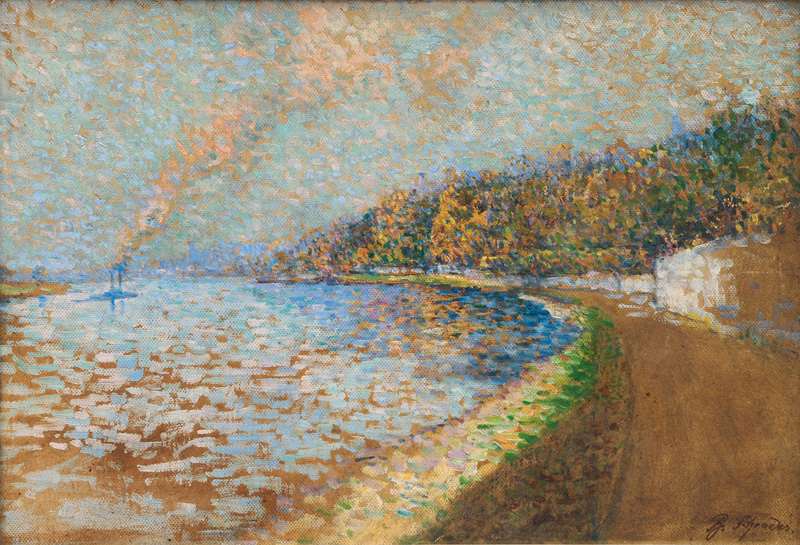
An der Elbe. Öl auf Karton, 25 x 35,5 cm, signiert B. Schrader, verso bezeichnet: 'Dresdner Kunstgenossenschaft Weihnachtsfeier 29. Dez. 1910, gem. von Bertha Schrader'.